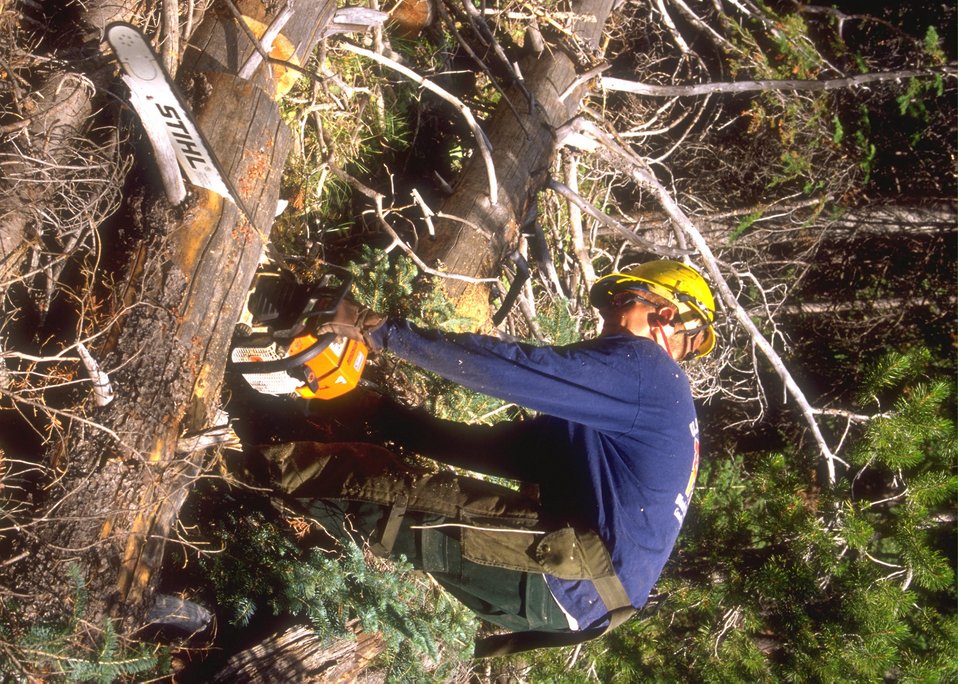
Fuels reduction management in progress at Muddy Mountain Recreation Area, Casper Field Office.